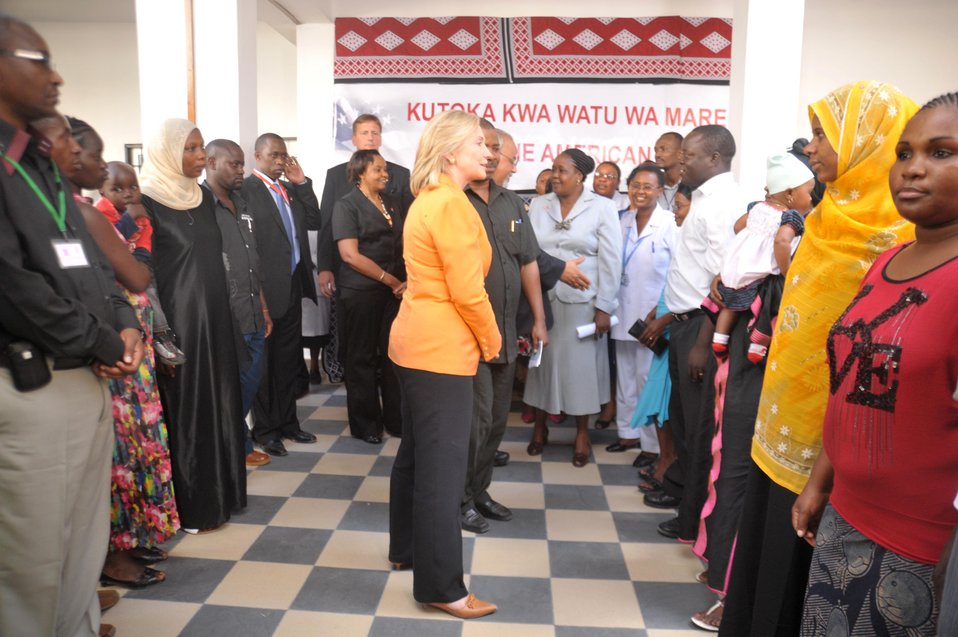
Secretary Clinton Meets With Patients and Health Workers

U.S. Secretary of State Hillary Rodham Clinton meets with patients and health workers, at the Buguruni Health Center in Dar es Salaam, Tanzania, on June 12, 2011.